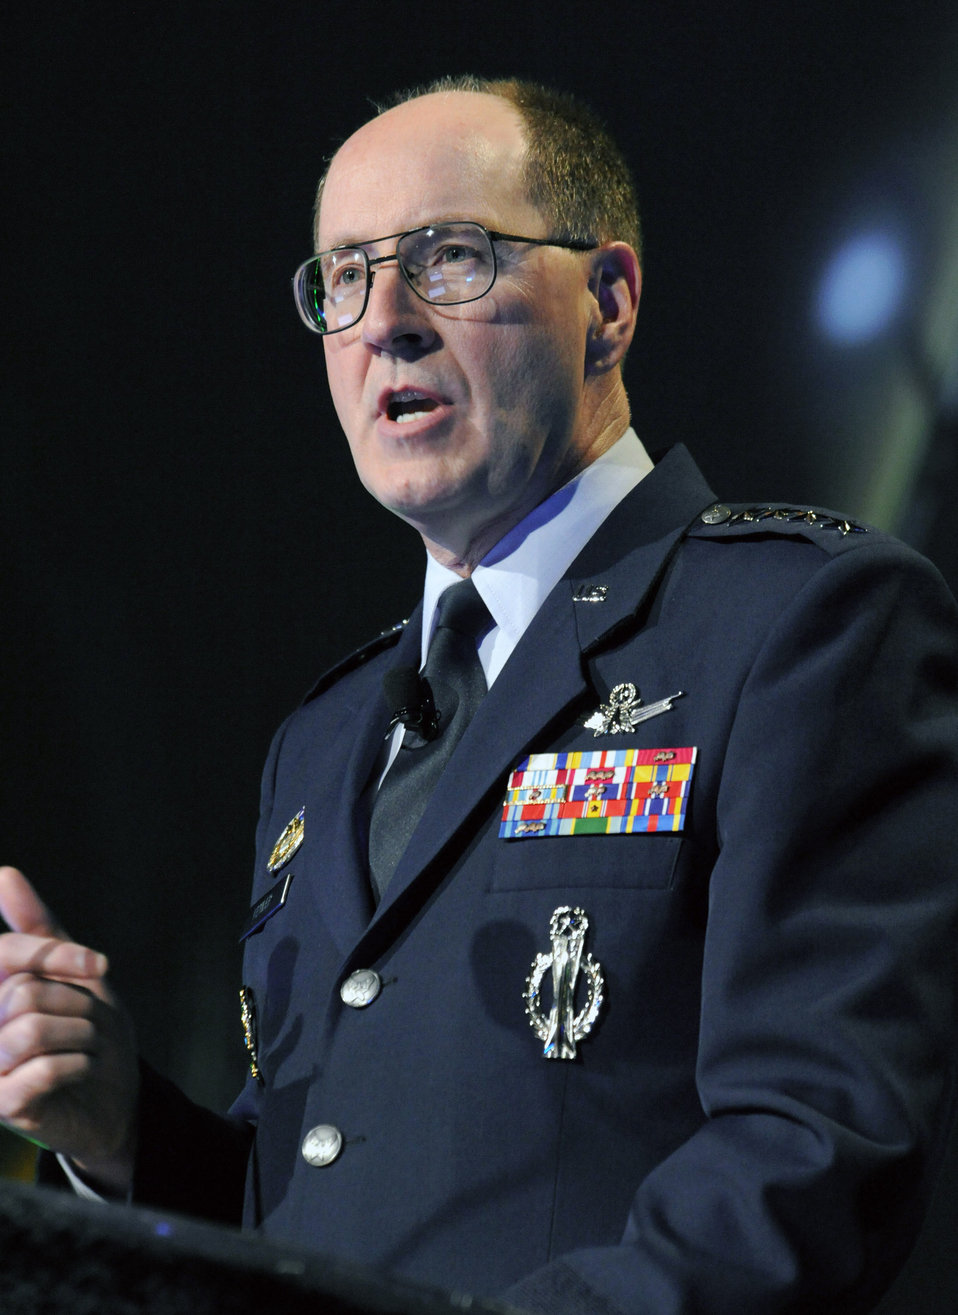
Generals discuss future issues at National Space Symposium

Gen. C. Robert